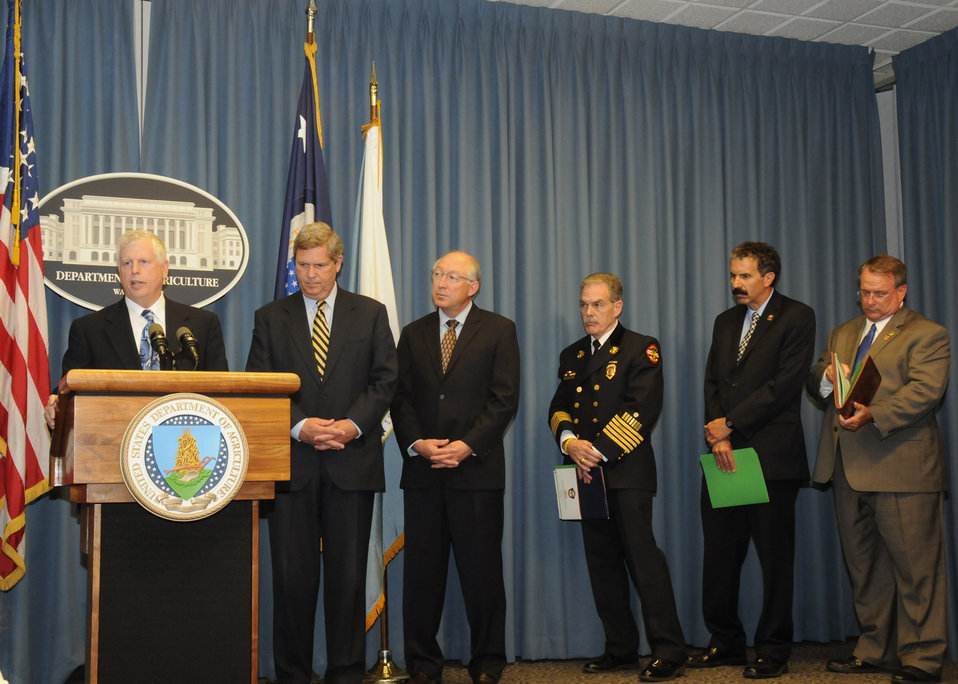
Forest Service Chief Tom Tidwell discusses the preparations the Forest Service has initiated for 2010 fires season at a press briefing held in the Department of Agriculture in Washington, DC, on Thursday, June 14, 2010. The press briefing provided fire risk assessments for the 2010 fire season in relation to weather conditions and federal readiness to respond to wildfires with partners across jurisdictions. (Standing L to R Agriculture Secretary Tom Vilsack, Interior Secretary Ken Salazar, First Vice President International Association of Fire Chiefs Jack Parow, National Fire Weather meteorologist Rick Ochoa, and Director National Association State Forester Steven Koehn). USDA photo 10di1408-44.